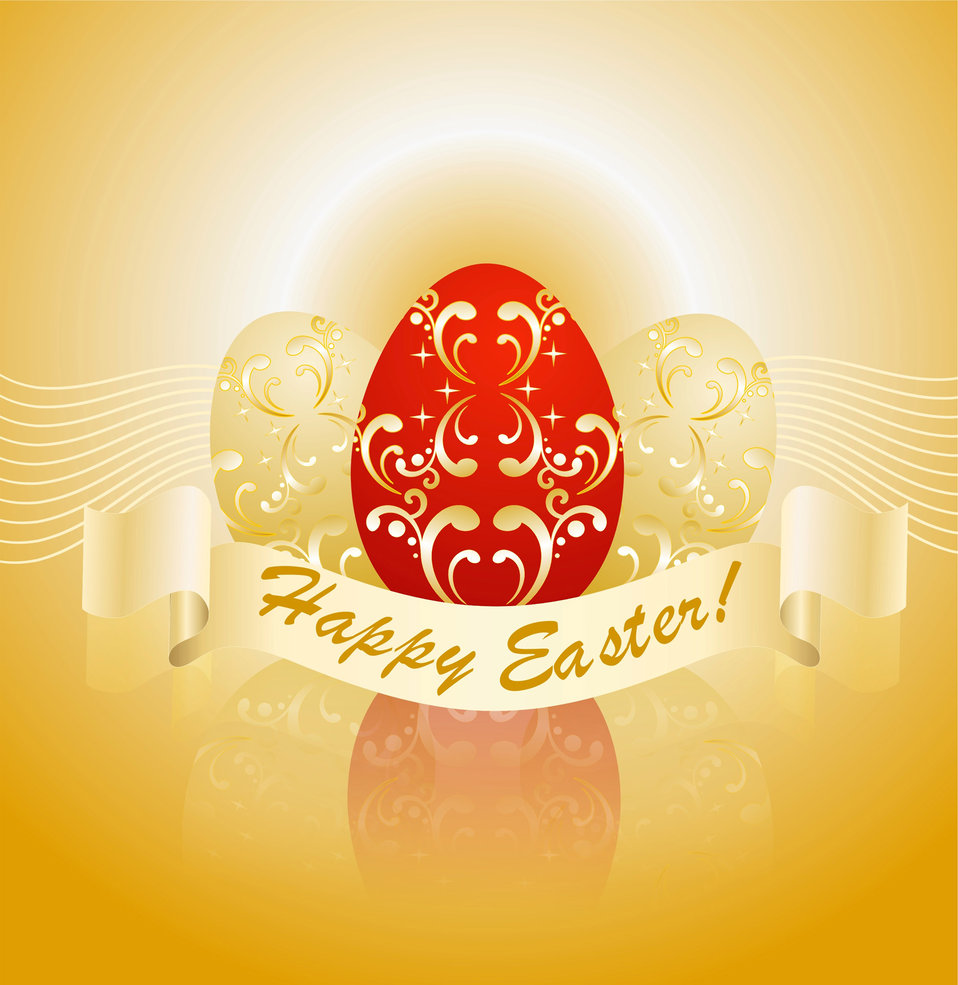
Happy easter!

Congratulation to easter..